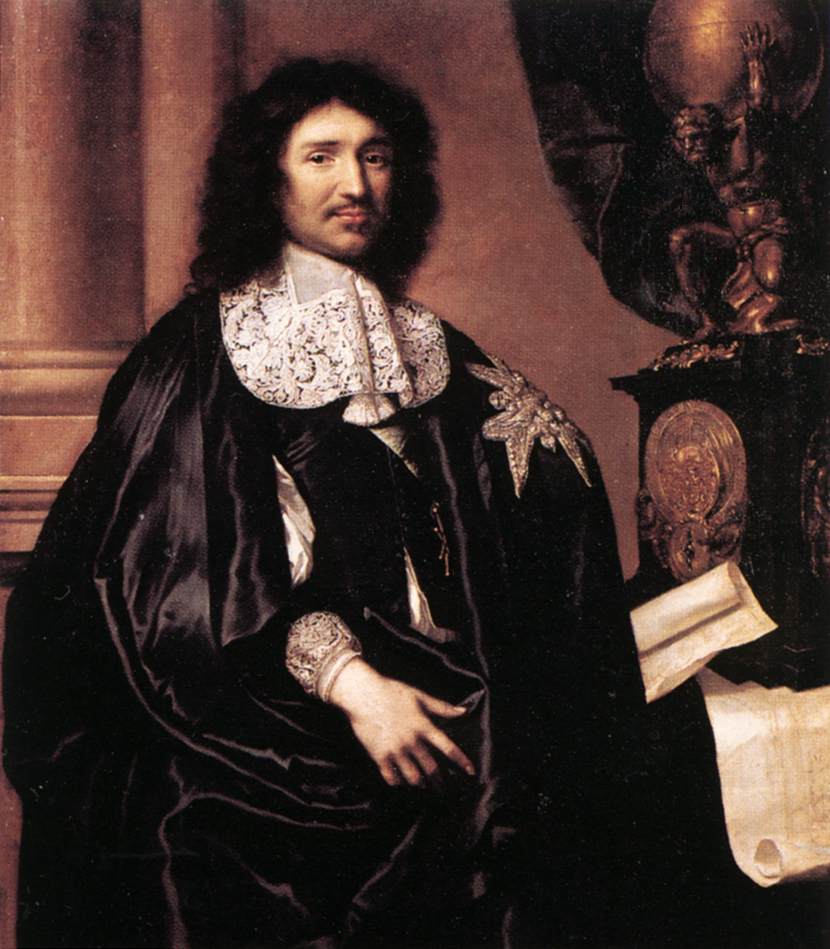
Claude Lefebvre - Portrait of Jean-Baptiste Colbert - WGA12628